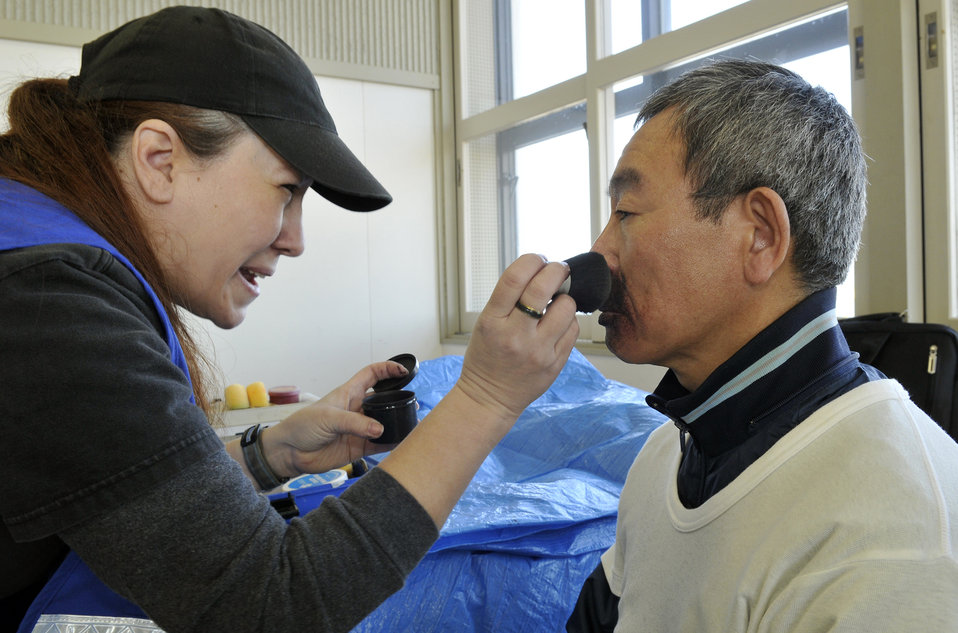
Emergency exercise

Elaine Ortiz-Harrison (left) applies moulage to Ueno Takashi, a Japanese volunteer for an accident exercise Feb. 23, 2011, in Misawa City, Japan. Moulage is a make-up technique used to create realistic injuries on exercise victims. Ms. Ortiz-Harrison is a volunteer make-up artist assigned to the 35th Medical Group.